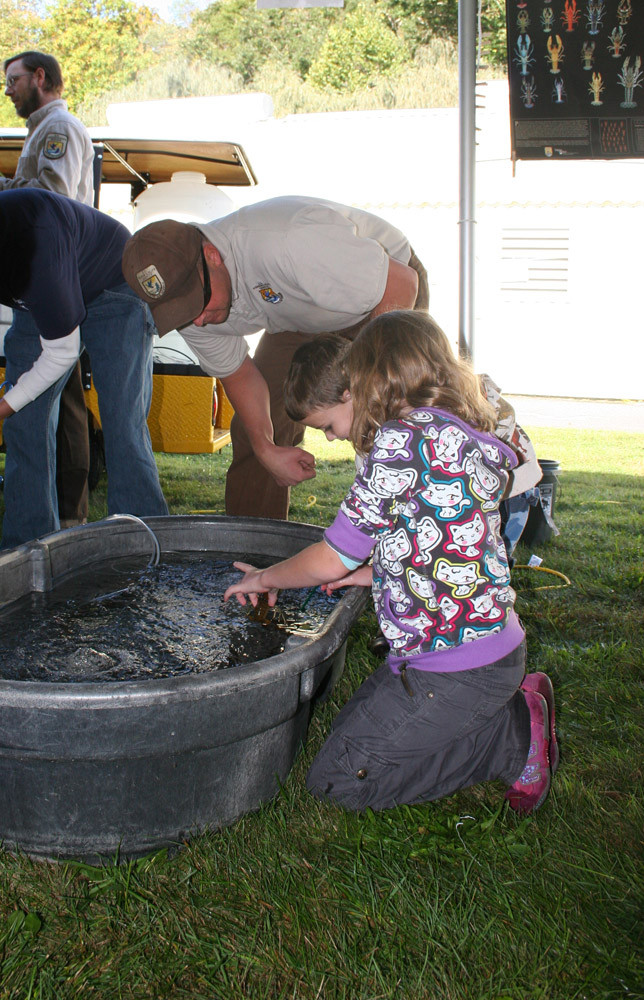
Freshwater Folk Festival (9)